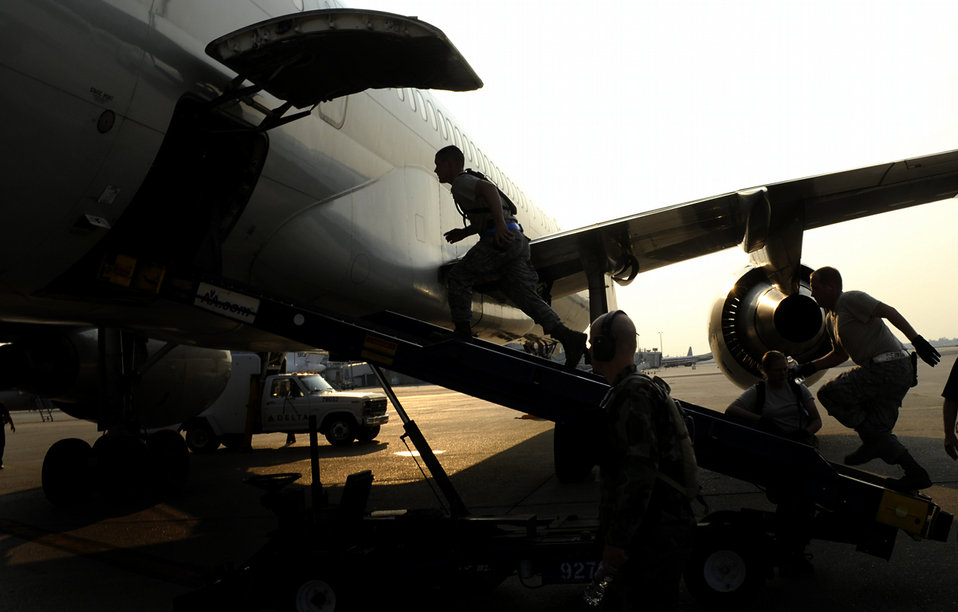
Airmen there as hurricane evacuation begins

Airmen from the 615th Contingency Response Wing at Travis Air Force Base, Calif., prepare to load luggage at the Louis Armstrong International Airport in New Orleans Aug. 30. Officials with the Federal Emergency Management Agency and the Department of Defense have chartered flights to transport evacuees of Hurricane Gustav to destinations safely outside the path of the hurricane.